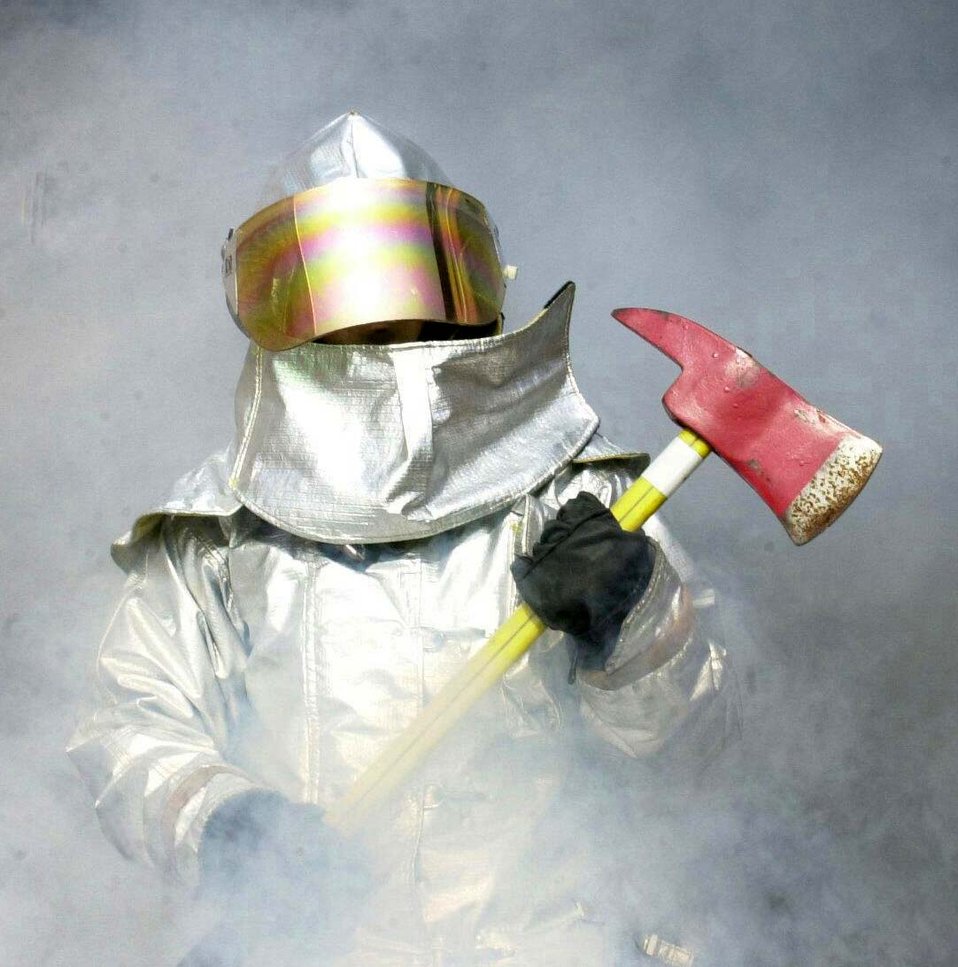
Firefighting skills

OSAN AIR BASE, South Korea -- Airman Jerry Vega demonstrates firefighting skills during an exercise here recently. Airman Vega is assigned to the 51st Fighter Wing.